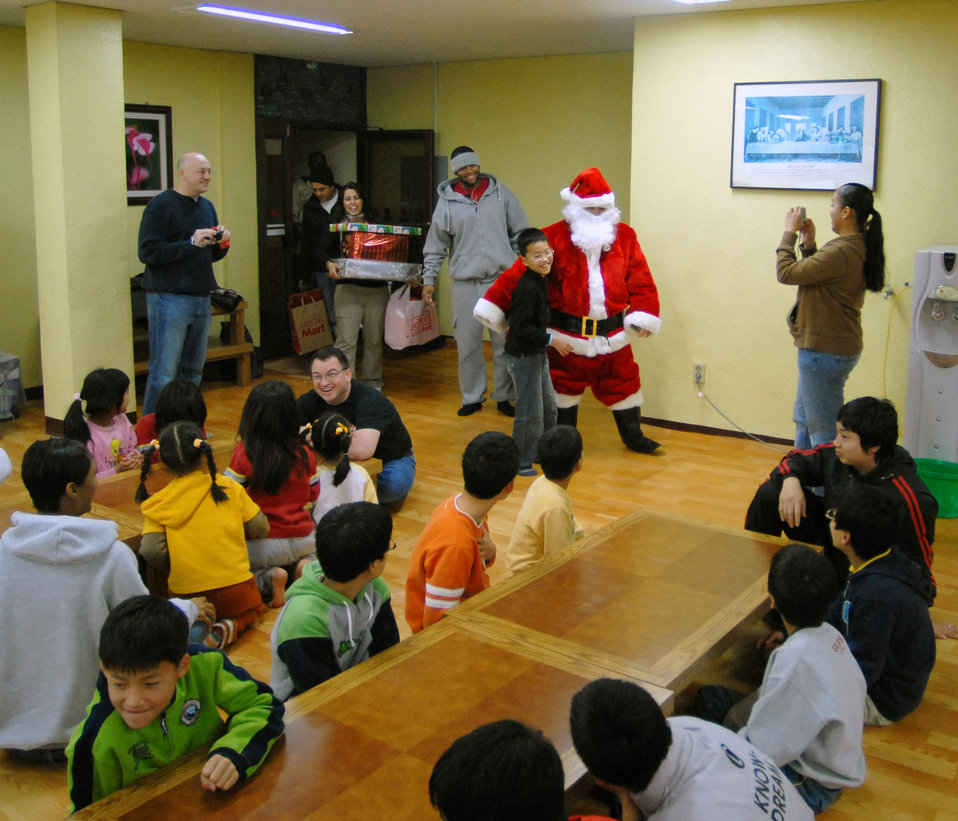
Airmen deliver Christmas to South Korean orphanage

Santa, played by Tech. Sgt. John Craven, makes a surprise visit to the Kae Jong orphanage to hand out gifts Dec. 15 in Kae Jong, South Korea. Airmen from Kunsan Air Base, South Korea, spent the afternoon handing out gifts, coloring, eating, and playing with children during an Airmen Committed to Excellence-sponsored trip. The Airmen donated various gifts to include beanie babies and a PlayStation 2.